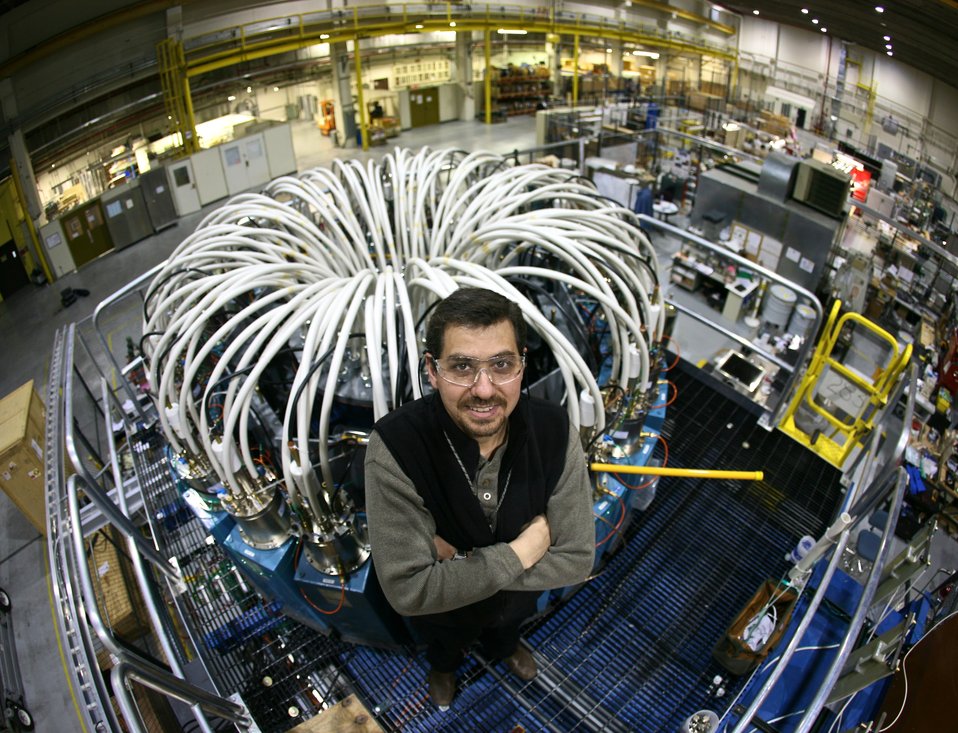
CHUCK MIELKE, ATOP THE SINGLE-TURN COIL CAGE, IS HEAD OF THE NATIONAL HIGH MAGNETIC FIELD LABORATORY PULSED FIELD FACILITY USER PROGRAM.

Powerful magnets-some the most powerful in the world-are available to researchers visiting the National High Magnetic Field Laboratory's Pulsed Field Facility. Located high on a mesa at Los Alamos National Laboratory, the NHMFL-PFF is the only pulsed high field user facility in the country as well as the center of exceptional condensed matter physics research.